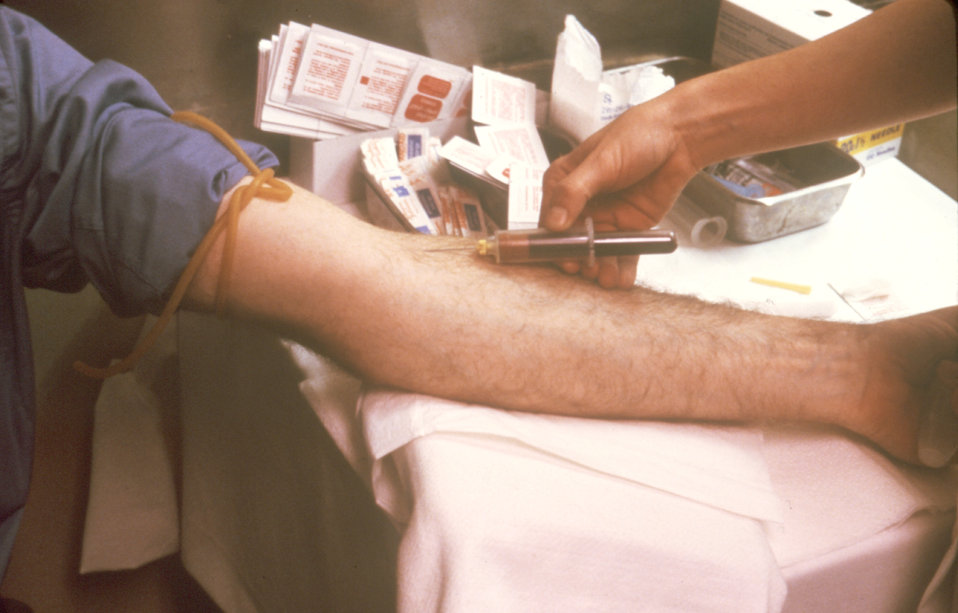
Here a medical technologist is obtaining a blood specimen from a patient during a test for L. pneumophila bacterium.